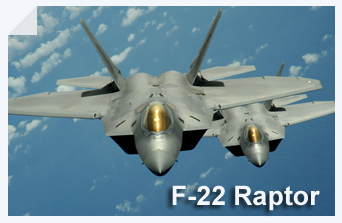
F-22 Photo Illustration